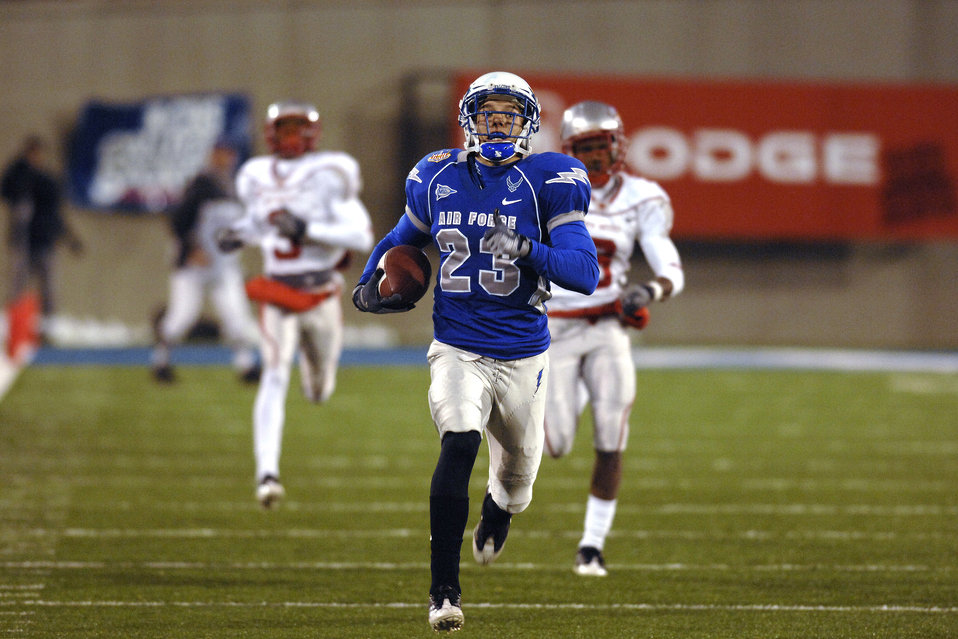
Football: Opportunistic Falcons topple New Mexico

U.S. Air Force Academy Falcon free safety Aaron Kirchoff rambles downfield during his 96-yard return of a fumble recovery for a game-changing touchdown against the University of New Mexico. The UNM Lobos scored 70 points last week against San Diego State, but were limited to only 10 points, which came off of early turnovers deep in Falcons territory. Despite the turnovers, the Falcons defense limited the New Mexico offense to 303 yards for a 23-10 win Oct. 23 at Falcon Stadium in Colorado.